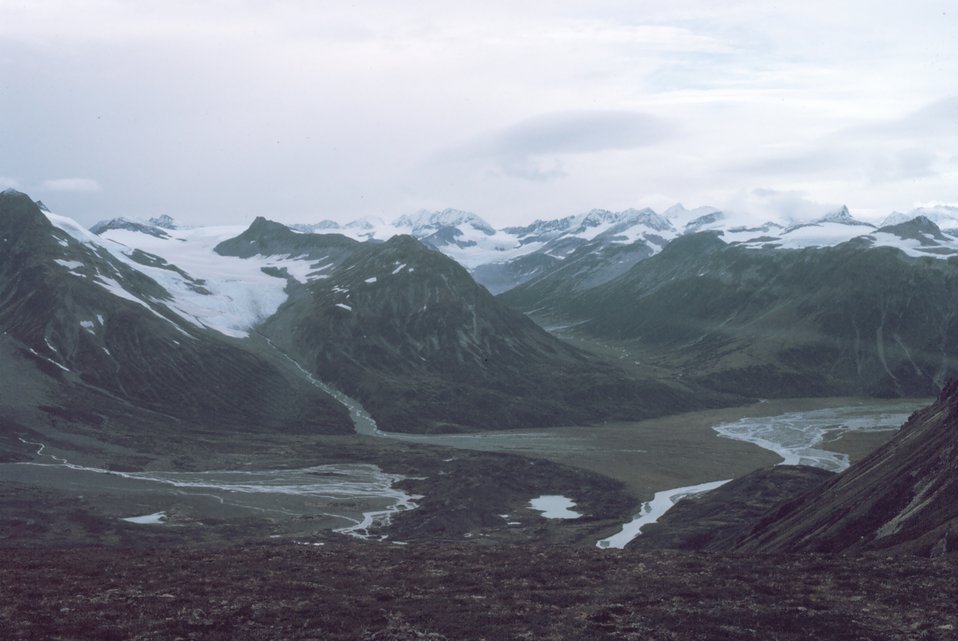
Mountains, glacial valleys, and a river valley on a gray day in Redoubt Volcano area.